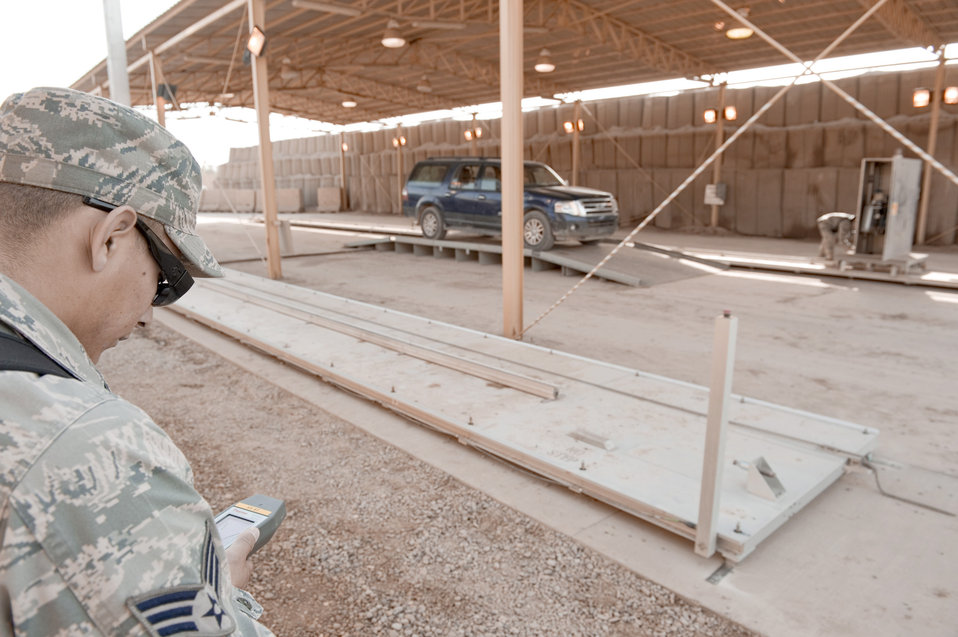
Airmen harness radiation to search vehicles

Senior Airman David Leon checks radiation levels of the area around the relocatable Vehicle and Cargo Inspection System Feb. 22, 2011, during training at Sather Air Base, Iraq. The VACIS is a recent addition to the Sather Air Base vehicle inspection arsenal and increases the capability to provide security to the base. Airman Leon is assigned to the 447th Expeditionary Security Forces Squadron.